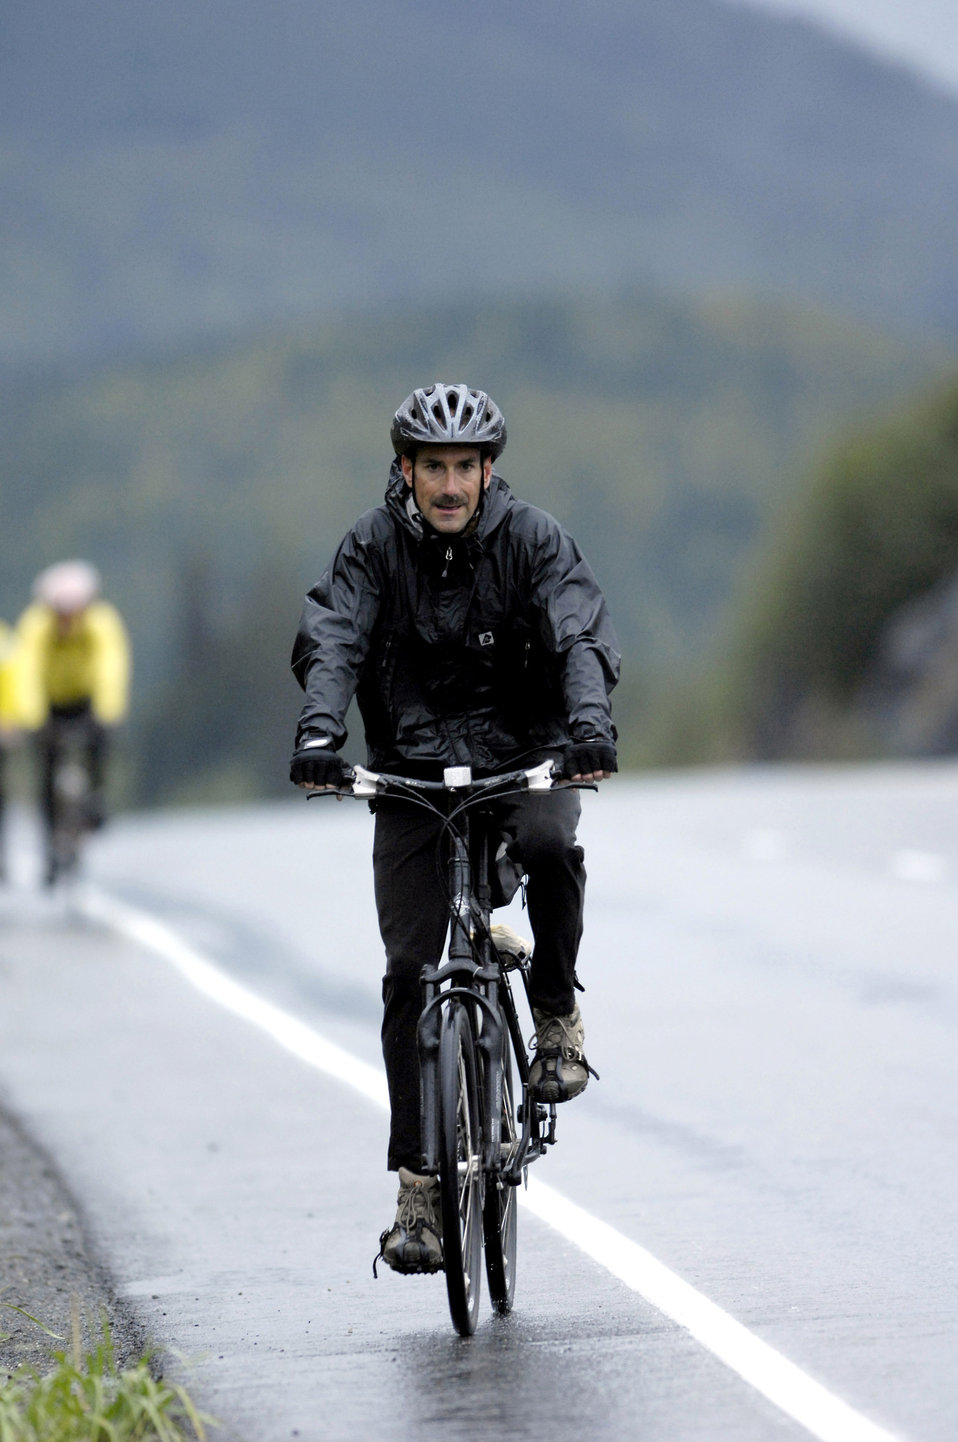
Arctic Warriors join battle against MS

Chief Master Sgt. Jay Wilson participates in the Alaska Multiple Sclerosis Bike Ride Sept. 8 along a section of the Seward Highway in the Kenai Peninsula, Alaska. Consistent and sometimes heavy rains didn't prevent Chief Wilson, a member of the 703rd Aircraft Maintenance Unit, or other Airmen from Elmendorf Air Force Base, Alaska, from completing the two-day ride. People who took the 126-mile, round-trip ride saw extreme elevation gains challenging even the most experienced of the 200 riders. All proceeds from this event raised money for the National Multiple Sclerosis Society.